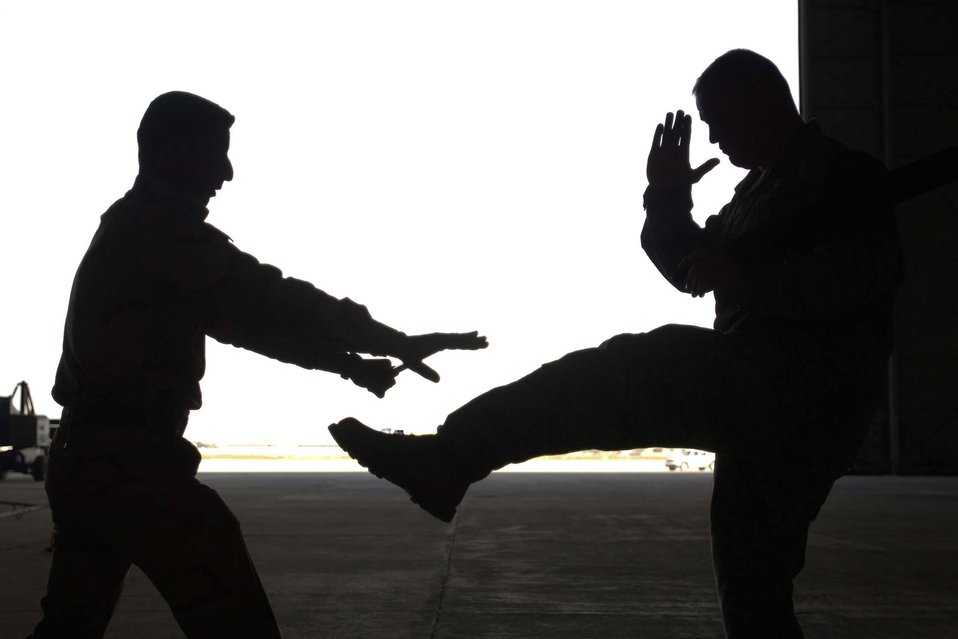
Security forces advisers provide advanced training for Iraqi airmen

Staff Sgt. Timothy DeTerra attempts to kick an Iraqi air force airmen Dec. 23, 2010, during a training session. This training is the first of its kind held at New Al-Muthana Air Base, Iraq, and promises to help the Iraqi air force build a reliable and secure force in the year ahead. Sergeant DeTerra is a New Al-Muthana Air Base Transition Team member.